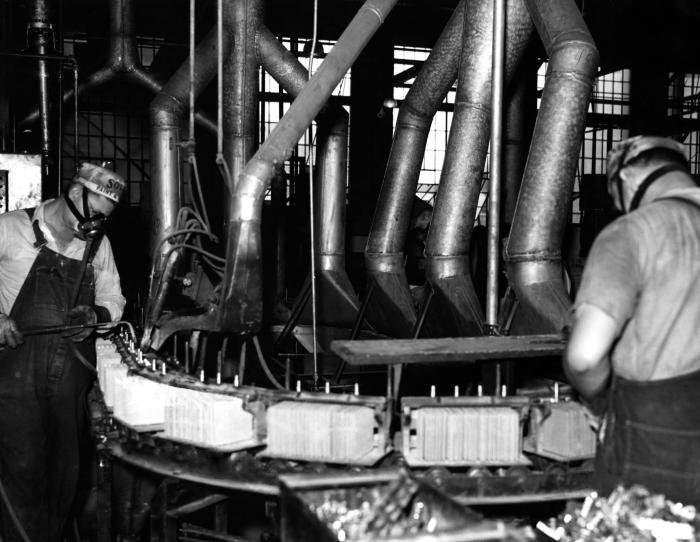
Published in the 'Public Health Bulletin', No. 262, 1941, this historic image, which was provided by the Center for Disease Control's (CDC), National Institute for Occupational Safety and Health (NIOSH) depicted a battery factory in which respirator-wearing workers were in the process of fusing the lead-acid battery assembly into a stable, self-contained unit using a blowtorch. Note the inclusion of an exhaust system situated in close proximity to the action at hand. As a device containing both lead, a toxic heavy metal, and acid, in the form of sulfuric acid, batteries are potentially dangerous, both in their finished state, as well as during their manufacture. Precautions need be taken when building a battery, including the use of goggles, gloves, and filtered breathing devices. These workers were wearing the requisite filtered mask and gloves, but no goggles, which would have prevented accidental eye exposure to splashing fluids.